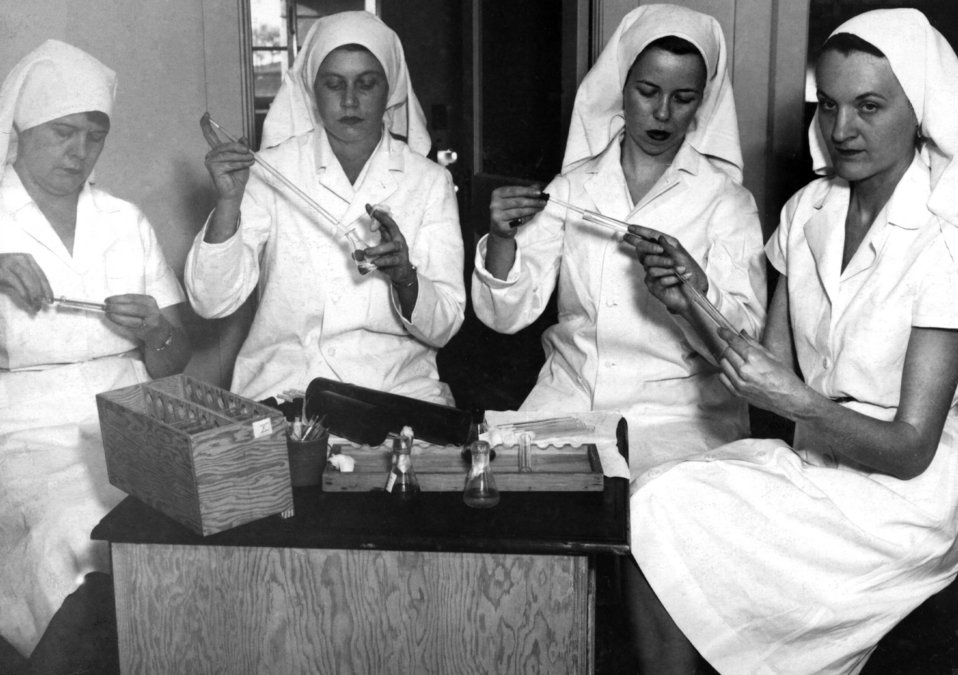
Technicians, Virus and Rickettsia Laboratory.